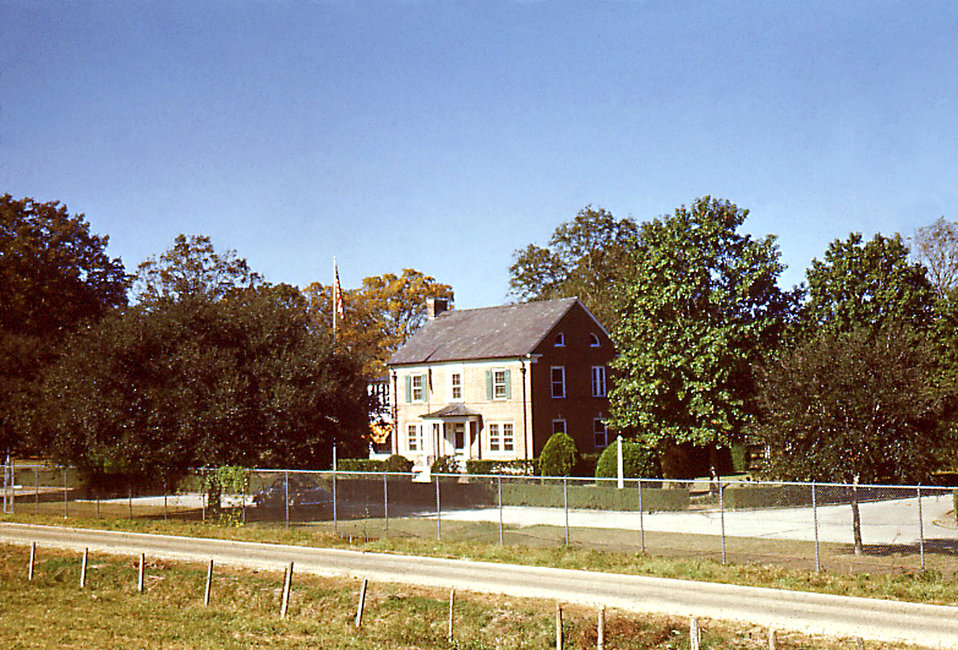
At the time of this photograph, this image depicted what was the home of the Carville, Louisiana Leprosarium's Chief Medical Officer, Dr. F.A. Johansen, who was a facility staff member for approximately 30 years. Dr. Johansen was scheduled to retire soon after this photograph was taken."Patients of the U.S. Marine Hospital in Carville, Louisiana, produced a set of 35 mm slides around 1950 from which this image was derived. In 2002, a patient's son donated the set, the only one known in existence, to the museum. The father, a patient at Carville for several years, brought these slides home around 1950 to give his family a snapshot of life at the national leprosarium. The act of quarantining patients for leprosy (HD) remained law in the state of Louisiana until 1957."